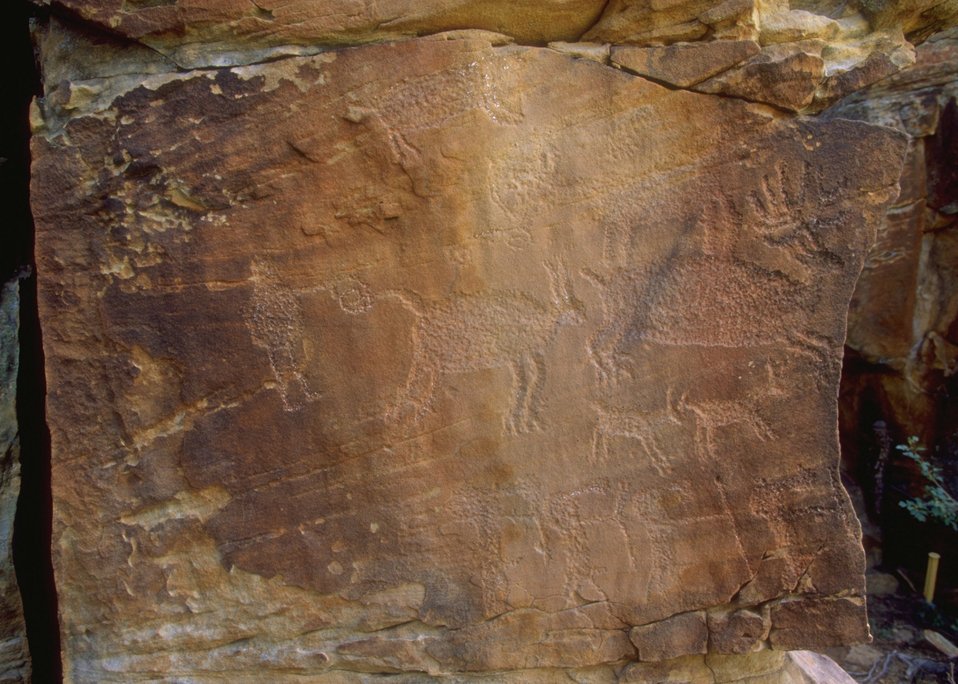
Petroglyph panel in Whoopup Canyon, Newcastle Field Office.